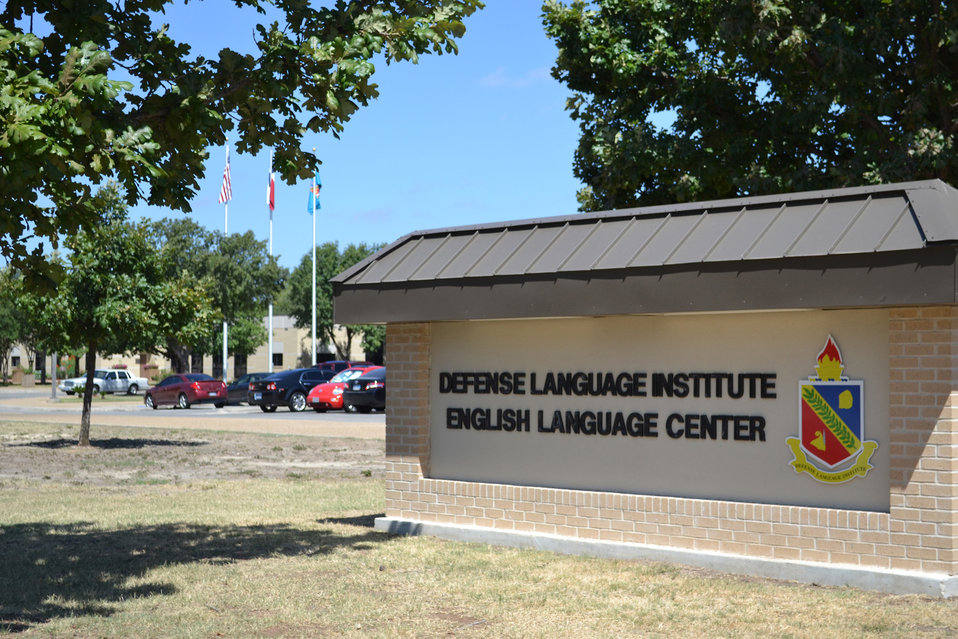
female Afghan helicopter pilot candidates

Four Afghan helicopter pilot candidates begin their English language studies July 13, 2011, at the Defense Language Institute English Language Center at Lackland Air Force Base, Texas.